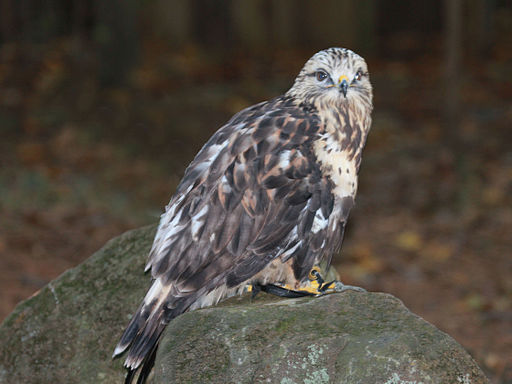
Rough-legged hawk